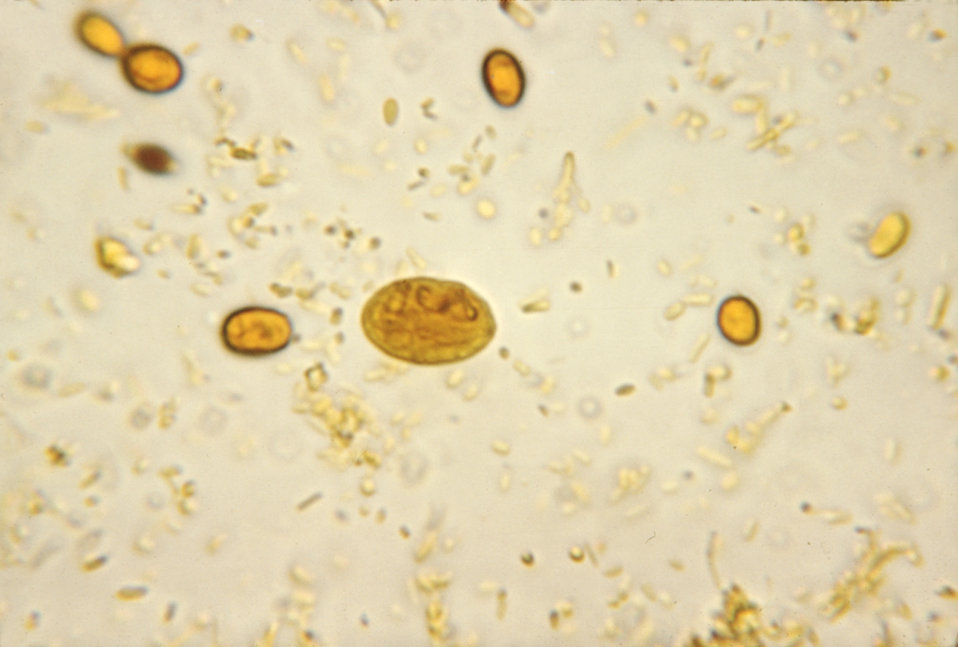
Giardia lamblia cyst. Iodine stain.